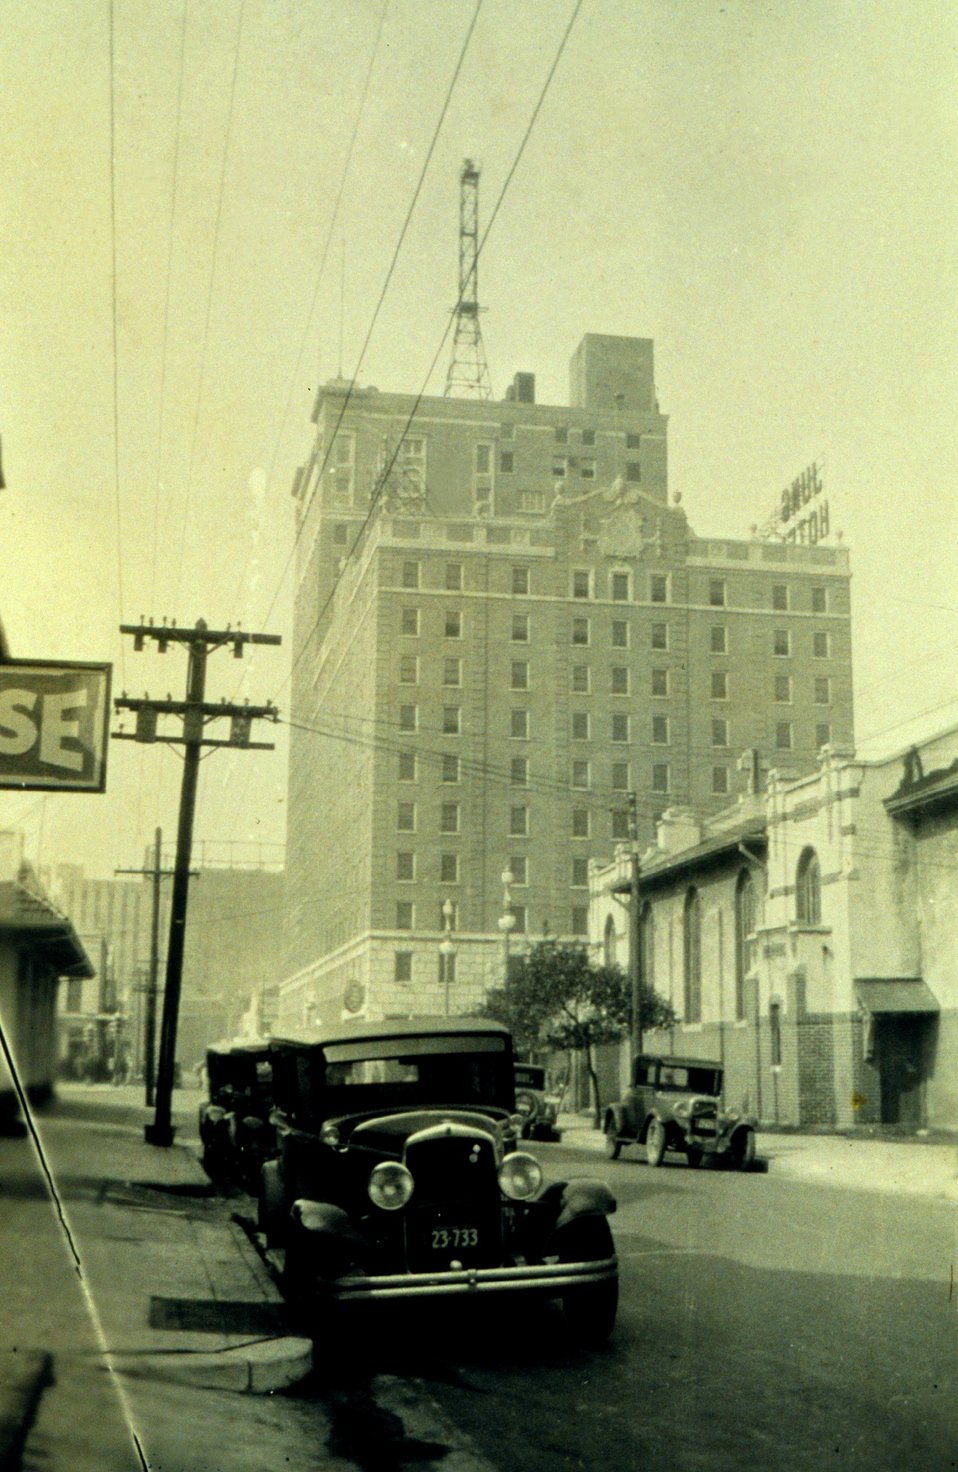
Hotel Jung at New Orleans.